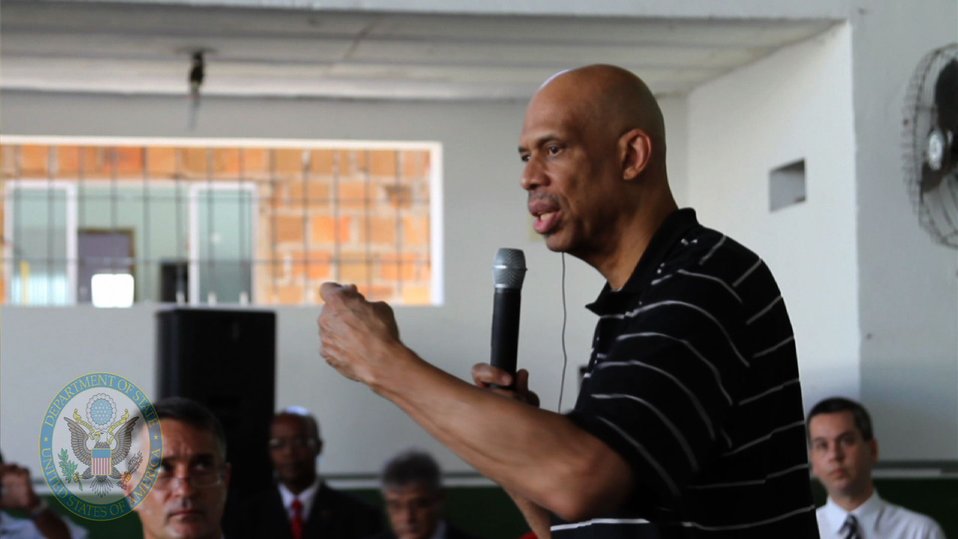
Cultural Ambassador Kareem Abdul-Jabbar Engages Youth

Hall-of-Famer and Global Cultural Ambassador for the U.S. Department of State Kareem Abdul-Jabbar engages youth in Salvador, Brazil, on January 24, 2012.